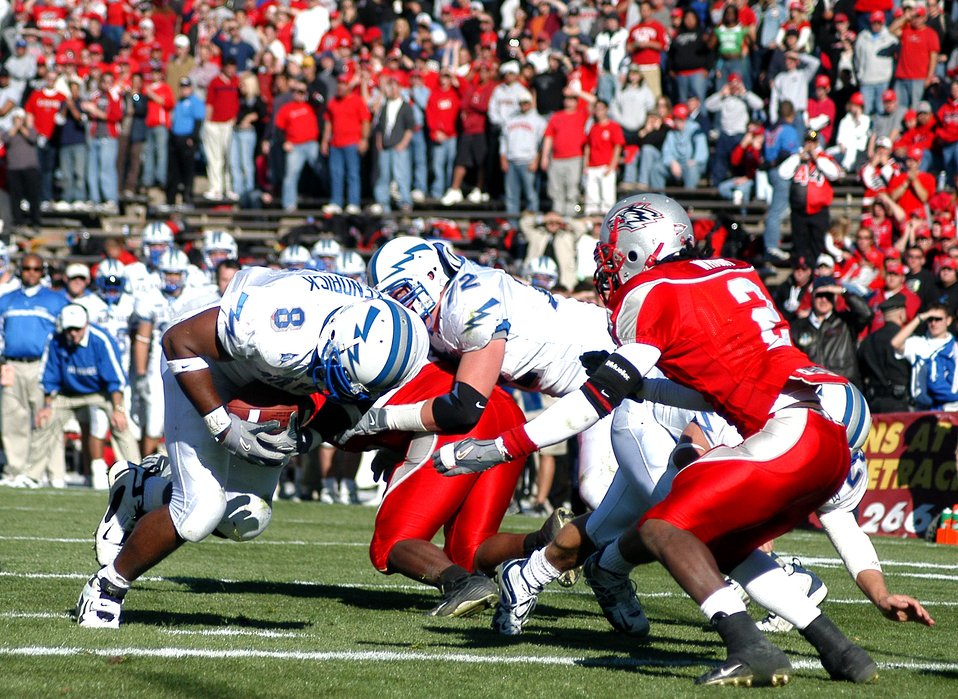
Falcons crush Lobos

ALBUQUERQUE, N.M. (AFPN) -- Falcon fullback Jacobe Kendrick bulls into the end zone for one of his two rushing touchdowns as New Mexico's safety DeAndre Wright braces for impact.